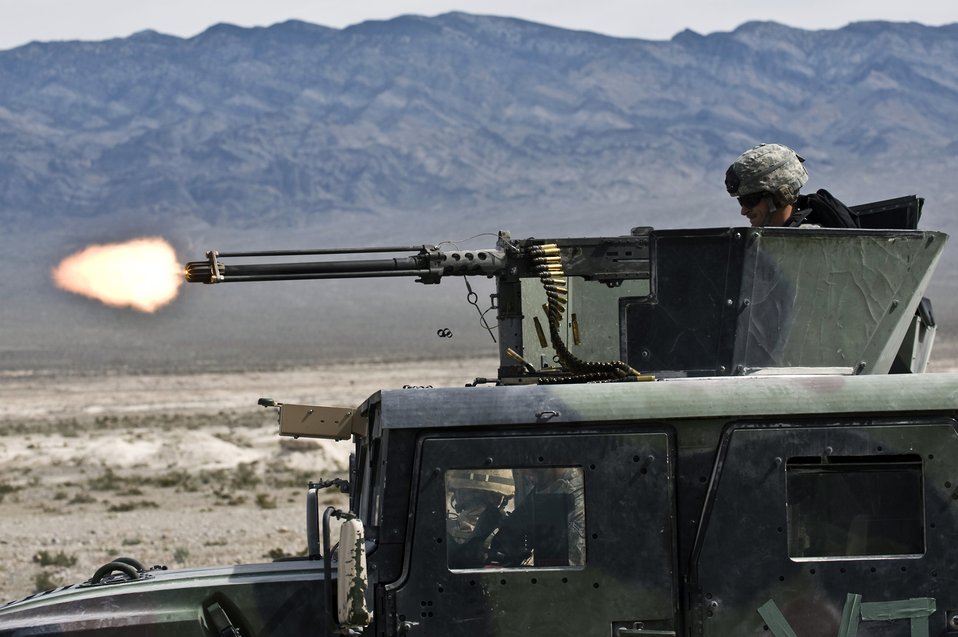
Target practice

Airman 1st Class Kyle Selsor fires a .50 caliber machine gun during a field training exercise March 16, 2011, as part of Desert Eagle on the Nevada Test and Training Range. Selsor is assigned to the 822nd Base Defense Squadron at Moody Air Force Base, Ga.